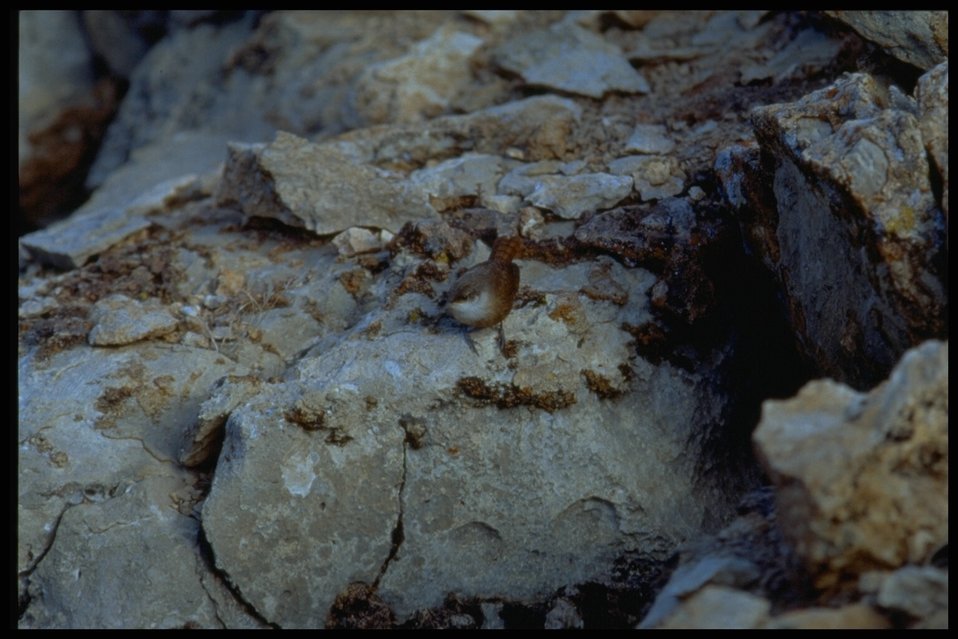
A bird at the Grand Canyon-Parashant National Monument blending in with it's surroundings.